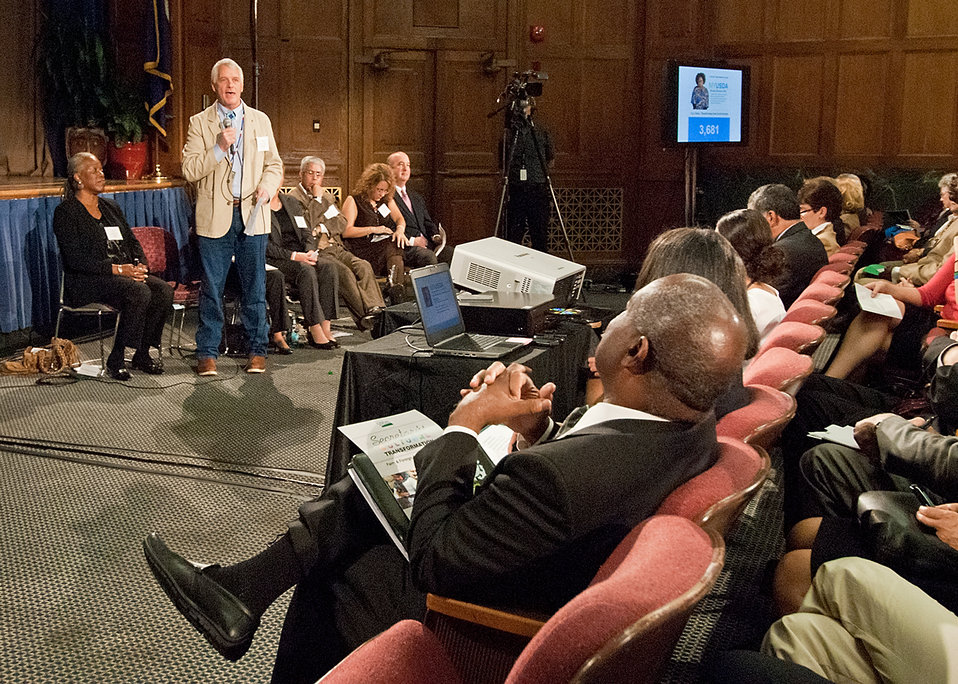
Bruce Nelson a panel member representing the Farm and Foreign Agriculture Services explains the cultural transformation elements implemented in his mission area during the Cultural Transformation Recognition Ceremony at the Jefferson Auditorium, US Department of Agriculture in Washington, DC, on Tuesday, October 4, 2011. Cultural Transformation is the process of creating a workplace where all employees and customers are treated with dignity, respect and the opportunity for success. Recognizing the important contributions of all employees to the operation of the United States Department of Agriculture. The goal of cultural transformation is to get everyone at USDA – from the Under Secretaries to employees at every grade level, in every location - to ensure USDA is a place where there’s opportunity for all to reach their full potential. Only then can USDA provide its customers with exceptional service in an equitable manner.